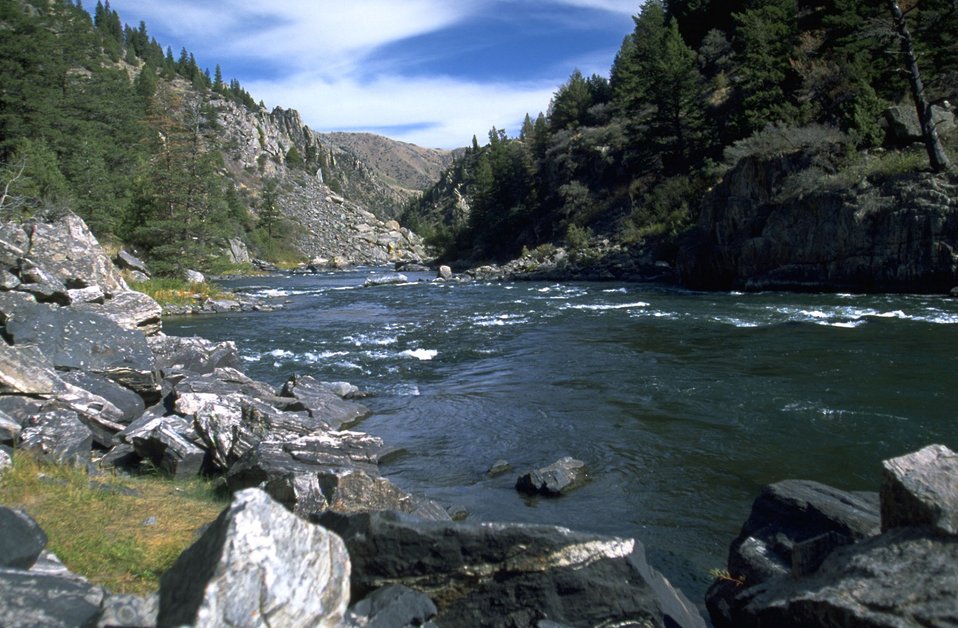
Looking downstream of the Madison River